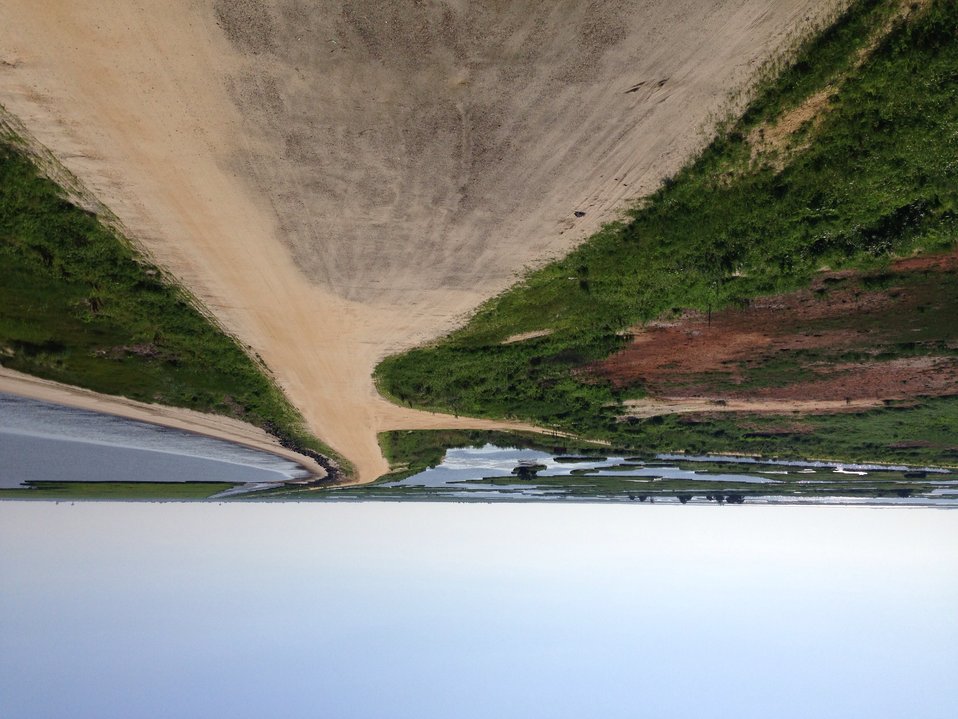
Forsythe wildlife drive after hurricane repairs

View from Gull Pond Tower on south dike looking east.